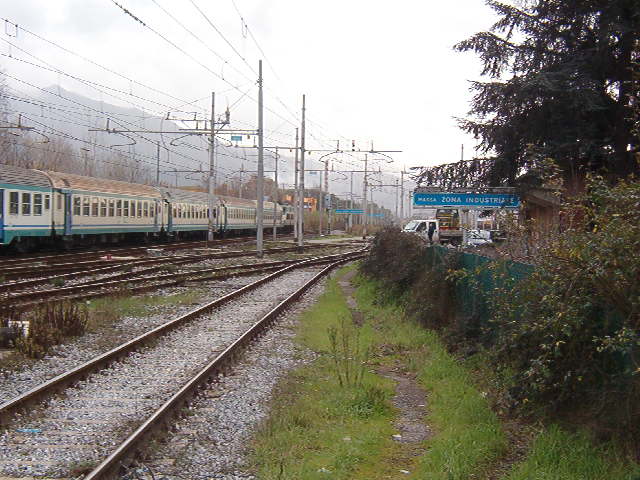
Italiano: un treno in transito presso la stazione di Massa Zona Industriale